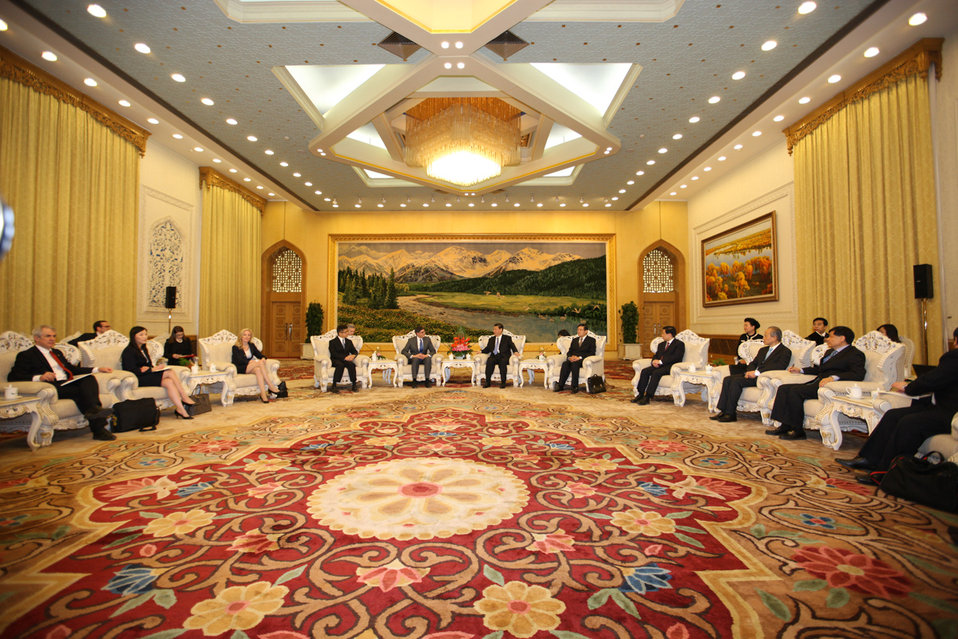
Secretary Lew met with China’s new leadership team in Beijing on Tuesday, March 19, 2013.

Secretary Lew was joined by (left) U.S. Ambassador to China Gary Locke, Treasury Under Secretary for International Affairs Lael Brainard and Sharon Yuan, Treasury’s Deputy Assistant Secretary for Trade and Investment Policy and acting senior coordinator for China and the Strategic and Economic Dialogue, as well as additional senior Treasury officials.